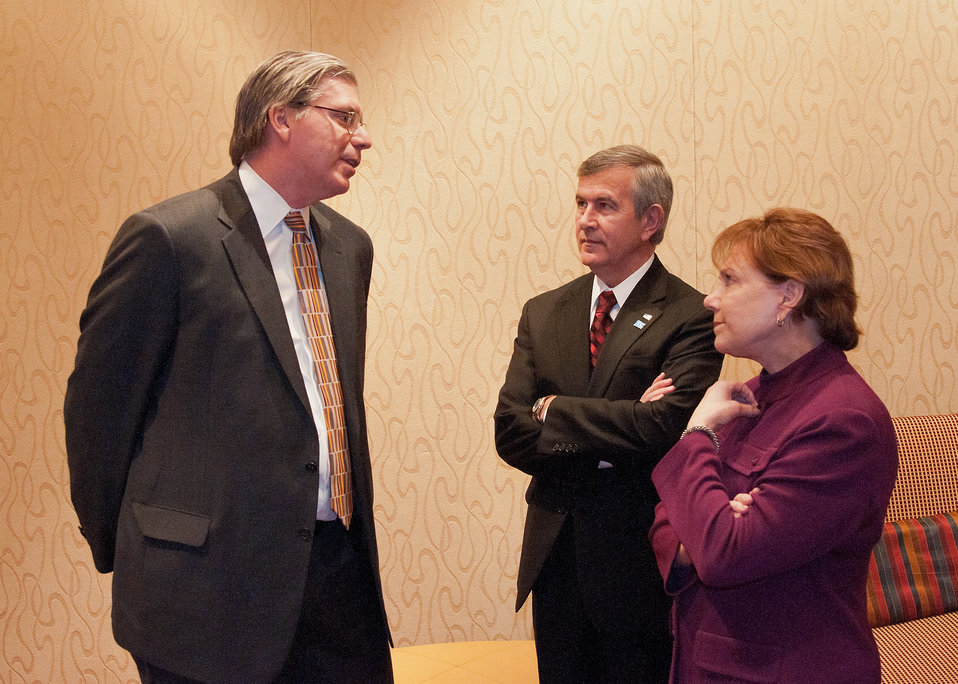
At the 2012 Agricultural Outlook Forum, “Moving Agriculture Forward” in Arlington, VA, held on Thursday, February23, 2012, 7 former Secretaries of Agriculture sat on the plenary panel “Visions of the Future” hosted by current Agriculture Secretary Tom Vilsack. Chief Economist Joseph Glauber speaks with former Agriculture Secretaries Senator Mike Johanns (NE) and Ann Veneman.